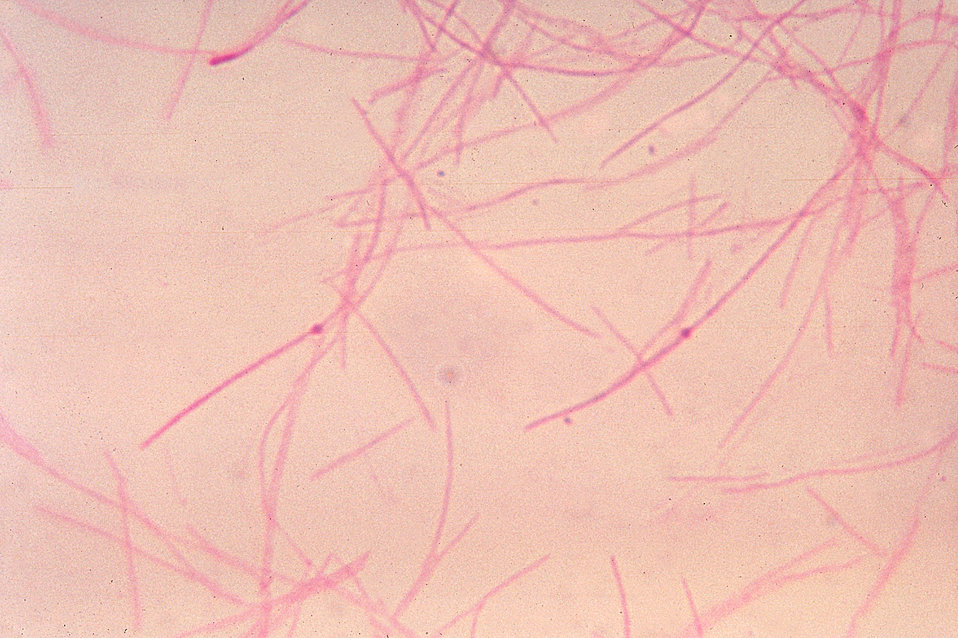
This micrograph depicts the gram-negative bacterium, Fusobacterium fusiforme cultured in blood agar for 48 hours.